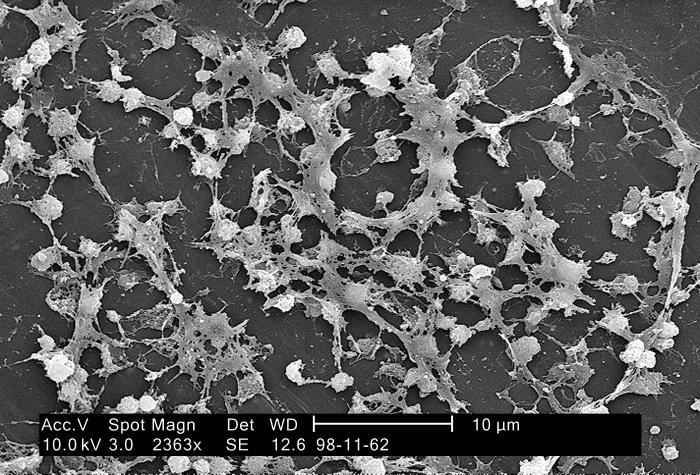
This electron micrograph depicted large numbers of Staphylococcus aureus bacteria, which were fond on the luminal surface of an indwelling catheter. Of importance is the sticky-looking substance woven between the round cocci bacteria, which was composed of polysaccharides, and is known as 'biofilm'. This biofilm has been found to protect the bacteria that secrete the substance from attacks by antimicrobial agents such as antibiotics; Magnified 2363x.S. aureus, often referred to simply as "staph," are bacteria commonly carried on the skin, or in the nose of healthy people. Approximately 25% to 30% of the population is colonized, i.e., when bacteria are present, but not causing an infection, in the nose with staph bacteria.